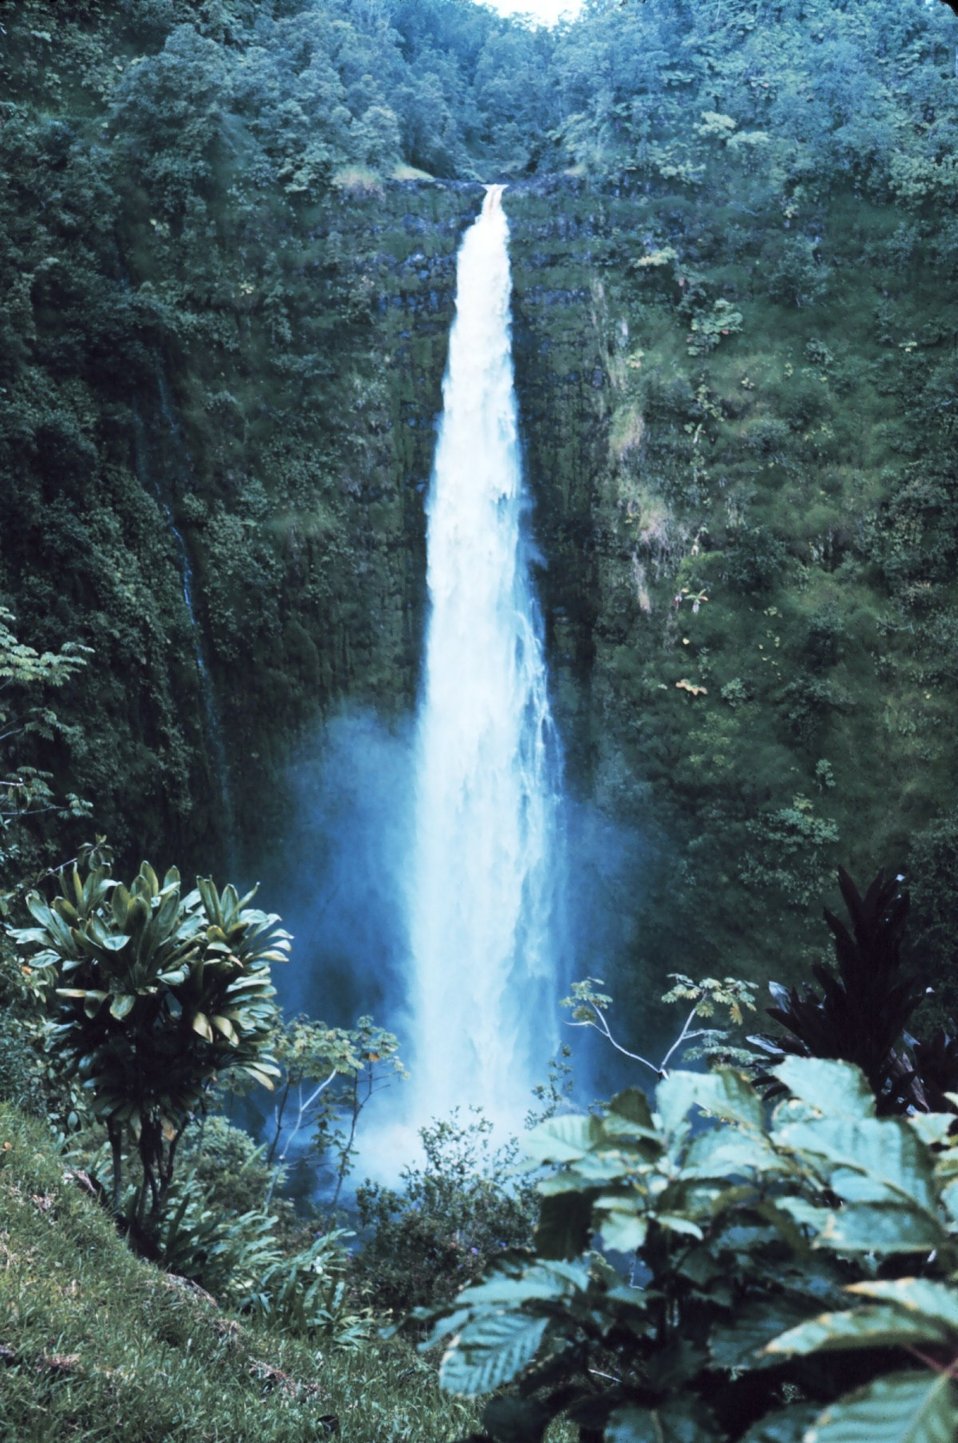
Akaka Falls, a 400-foot drop.